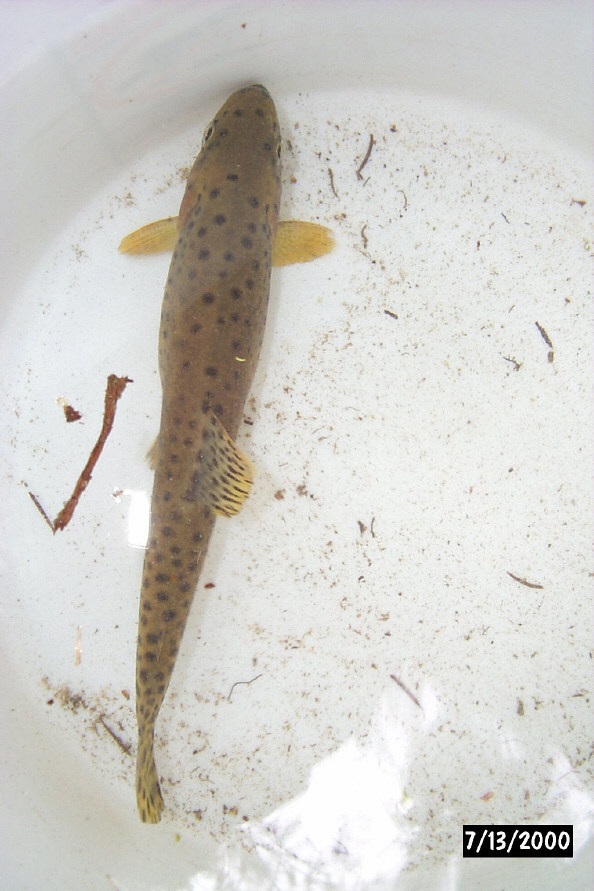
Fat trout Salmon Field Office UCSC Upper Columbia Salmon Clearwater District